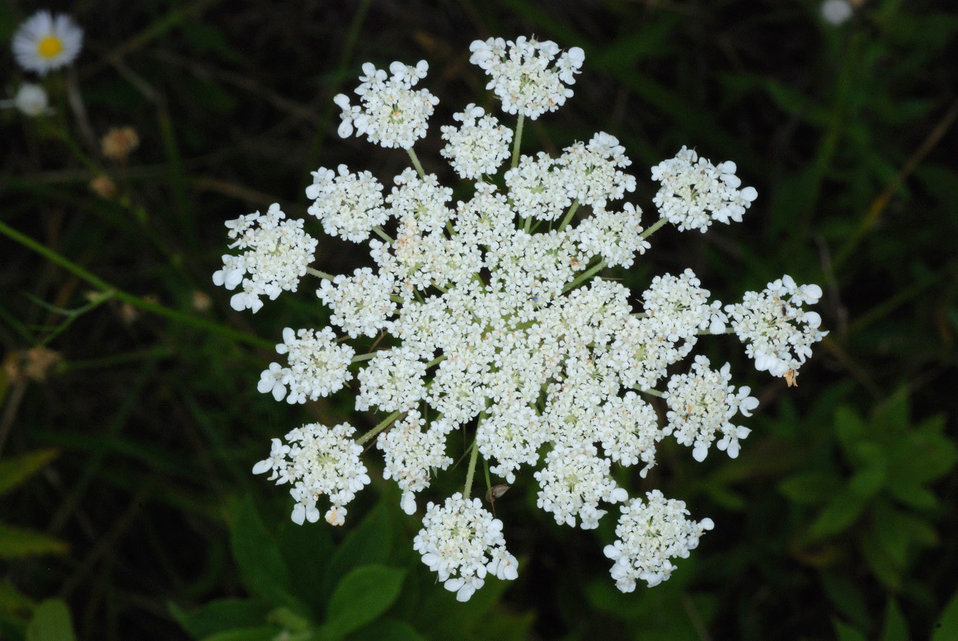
Daucus Car 2 (2)

Daucus: Top-view of the flower structure of Daucus carota, Queen Anne’s lace or wild carrot, Bedford County, Virginia. Doug Goldman, USDA-NRCS-NPDT